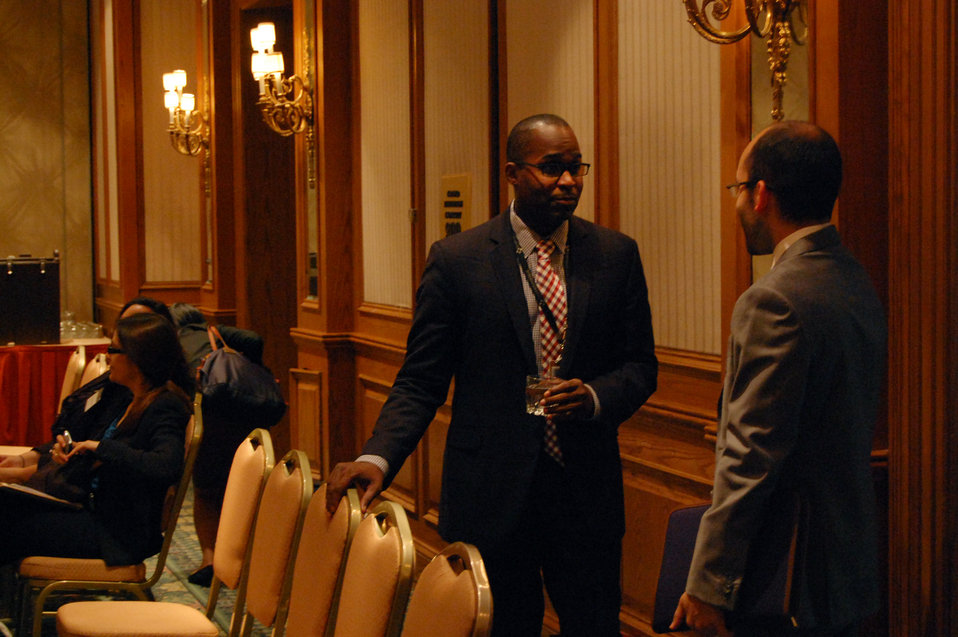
PACHA conf005